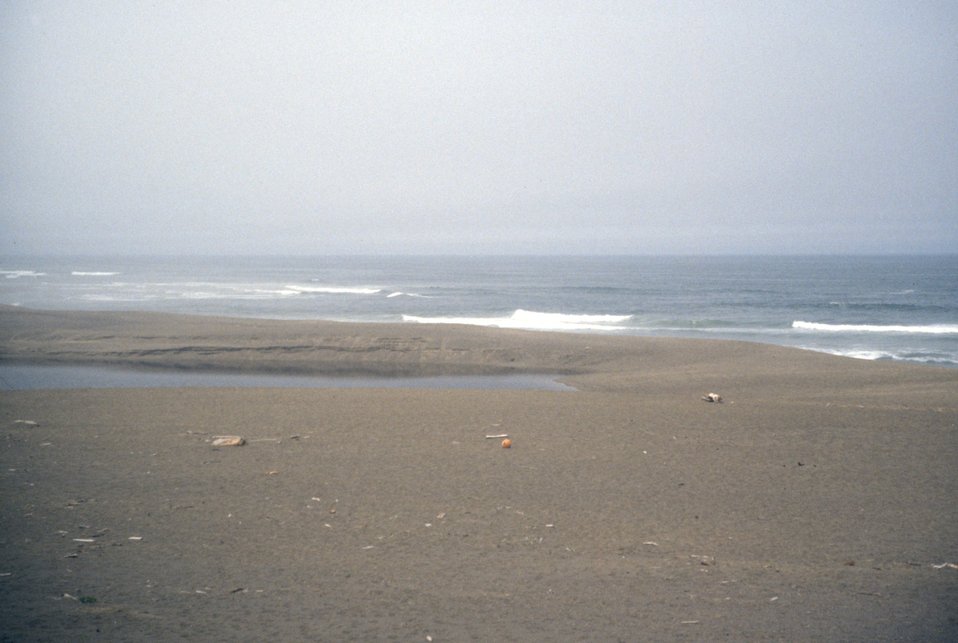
Point Reyes Great Beach